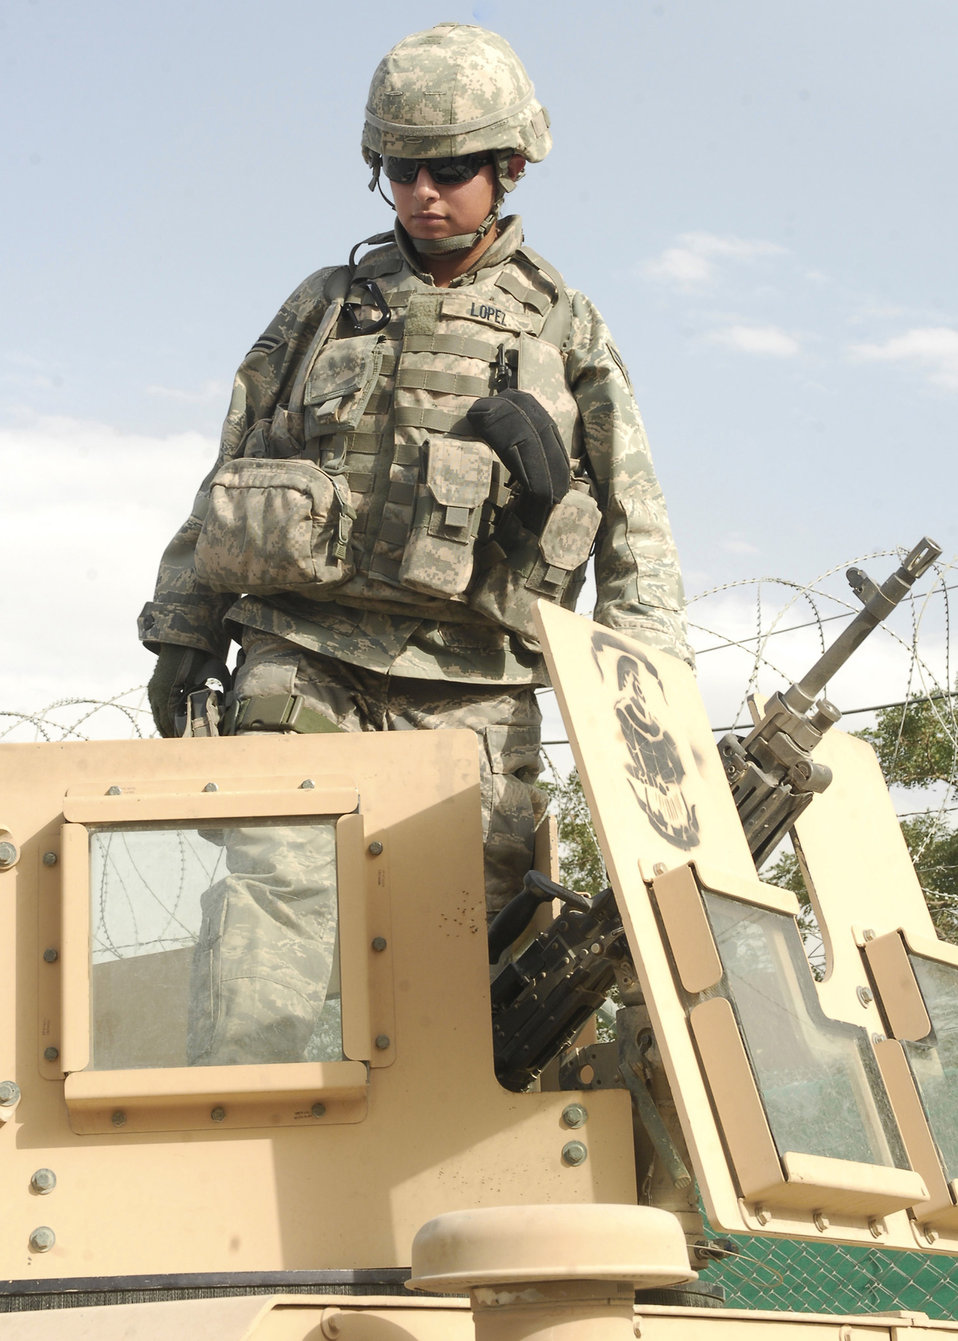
Lock and load

Airman 1st Class Diana Lopez prepares for a patrol and to man an M249 automatic rifle mounted on a vehicle at Bagram Airfield, Afghanistan. She is assigned to the 455th Expeditionary Security Forces Squadron and deployed from Edwards Air Force Base, Calif.